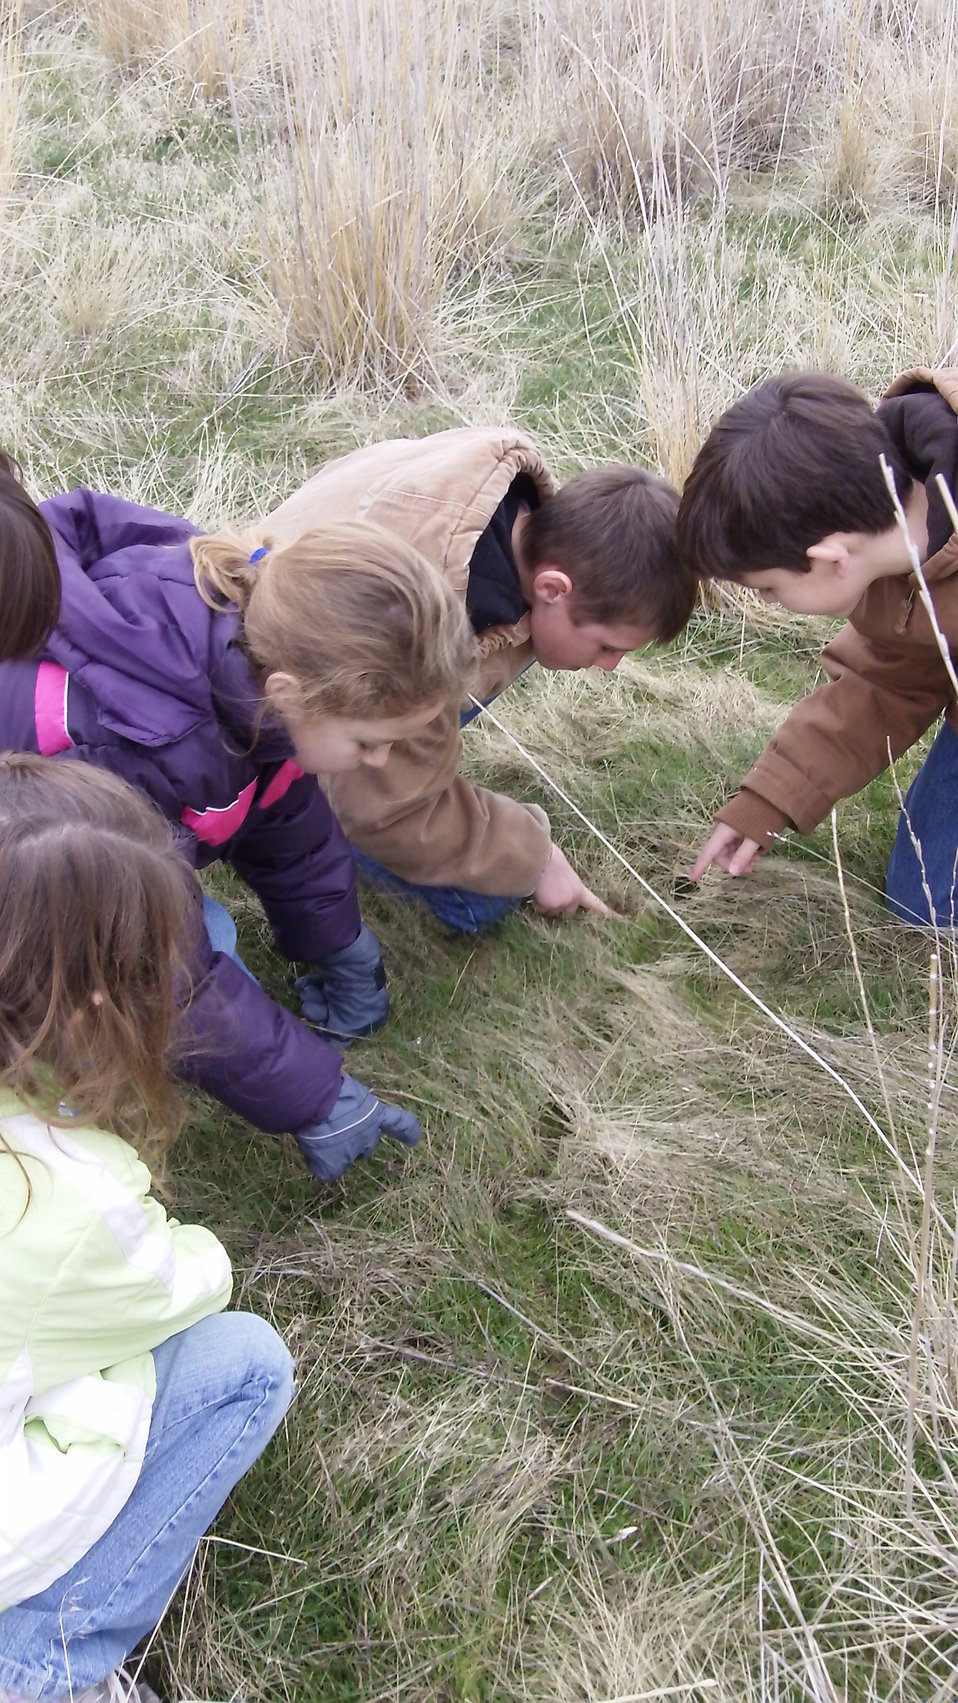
Follow That Footprint

Students from the New Beginnings home school program visit the Bear River Migratory Bird Refuge to take part in the Follow that Footprint tracking program. Here, young students investigate a vole hole and trail.